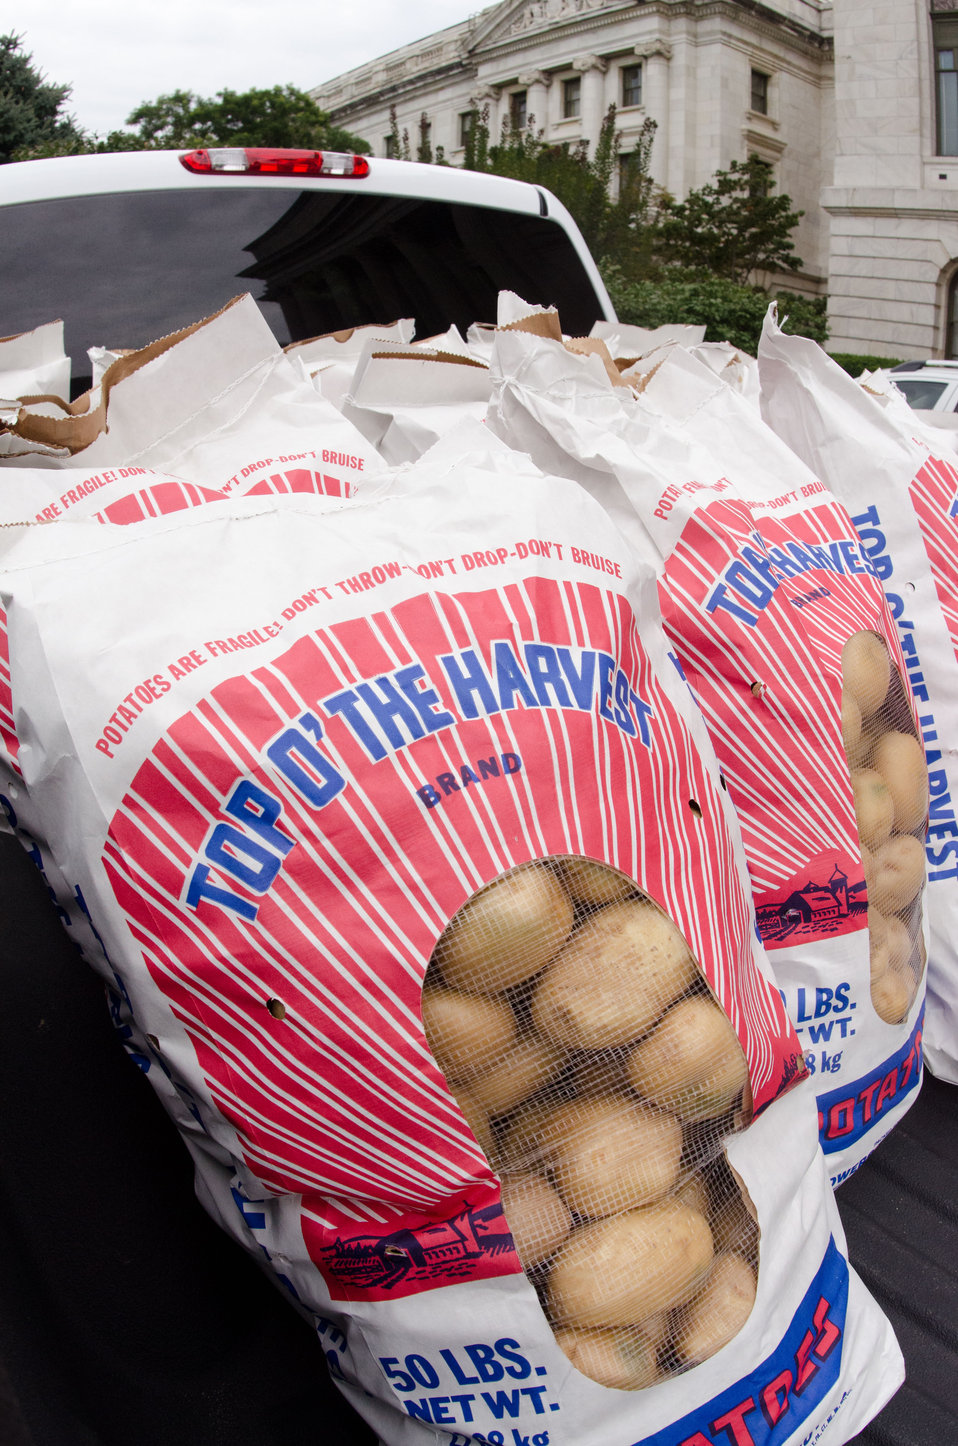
Agriculture Under Secretary for Farm and Foreign Agriculture Service (FFAS) Michael Scuse donates 1,000 pounds of potatoes to DC Central Kitchen, for the Feds Feed Families Food Drive, on Monday, August 20, 2012 in front of the Agriculture headquarters in Washington, D.C. Under Secretary Scuse, a farmer himself purchased the half-ton of potatoes at Wicks farm, near his own farm, in Delaware.